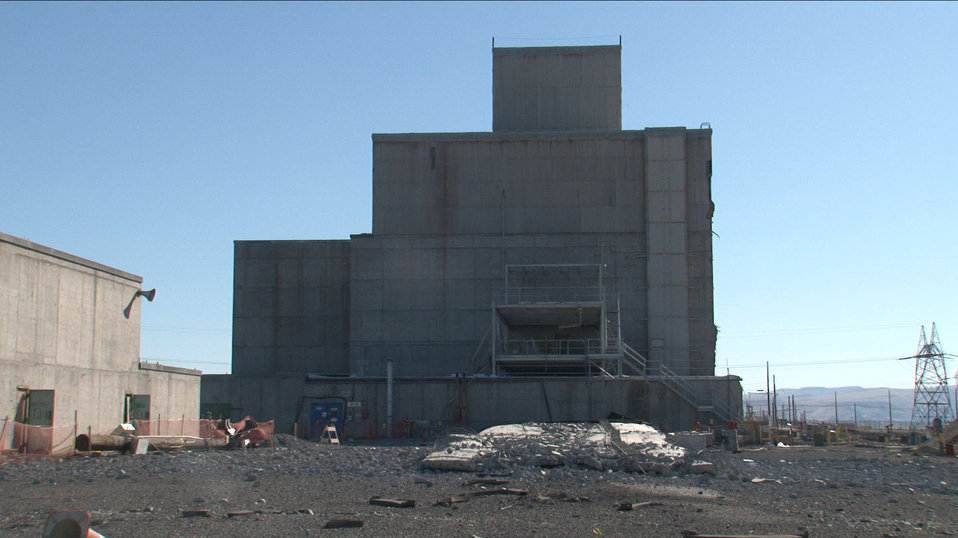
116KE debris after demolition

Workers safely demolished a 175-foot-high exhaust stack at the Hanford Site in southeastern Washington state, a project supported by $420,000 in Recovery Act funds.